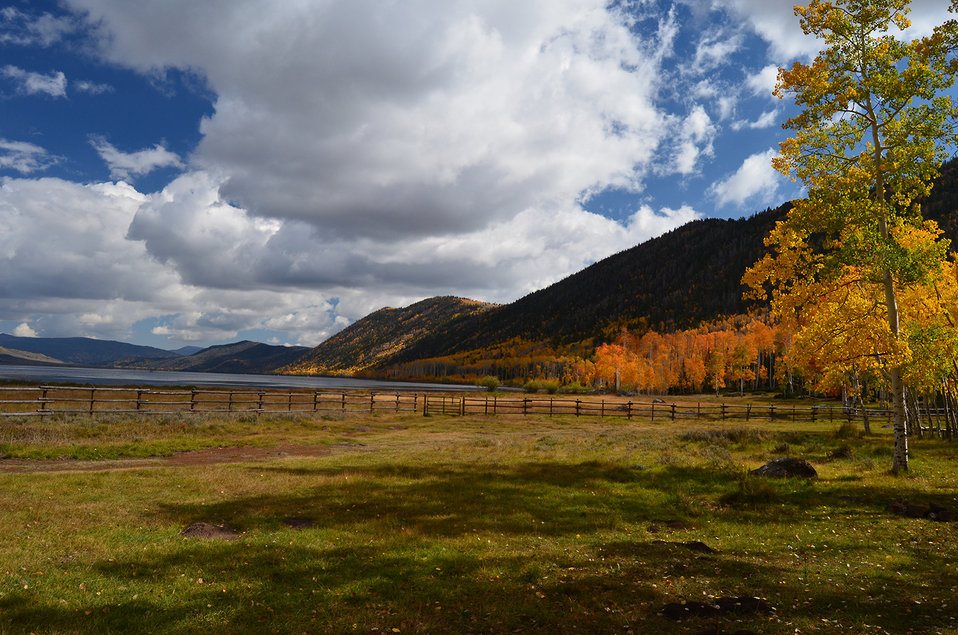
Fishlake National Forest. UT

The Lakeshore National Recreation Trail on the Fishlake National Forest, UT offers a variety of experiences for visitors to the Fish Lake Basin. Visitors may wish to experience a portion of the trail or its entirety. Summer and fall are the best time to visit, with fall being a popular time to take in the autumn beauty of the Fish Lake Basin.